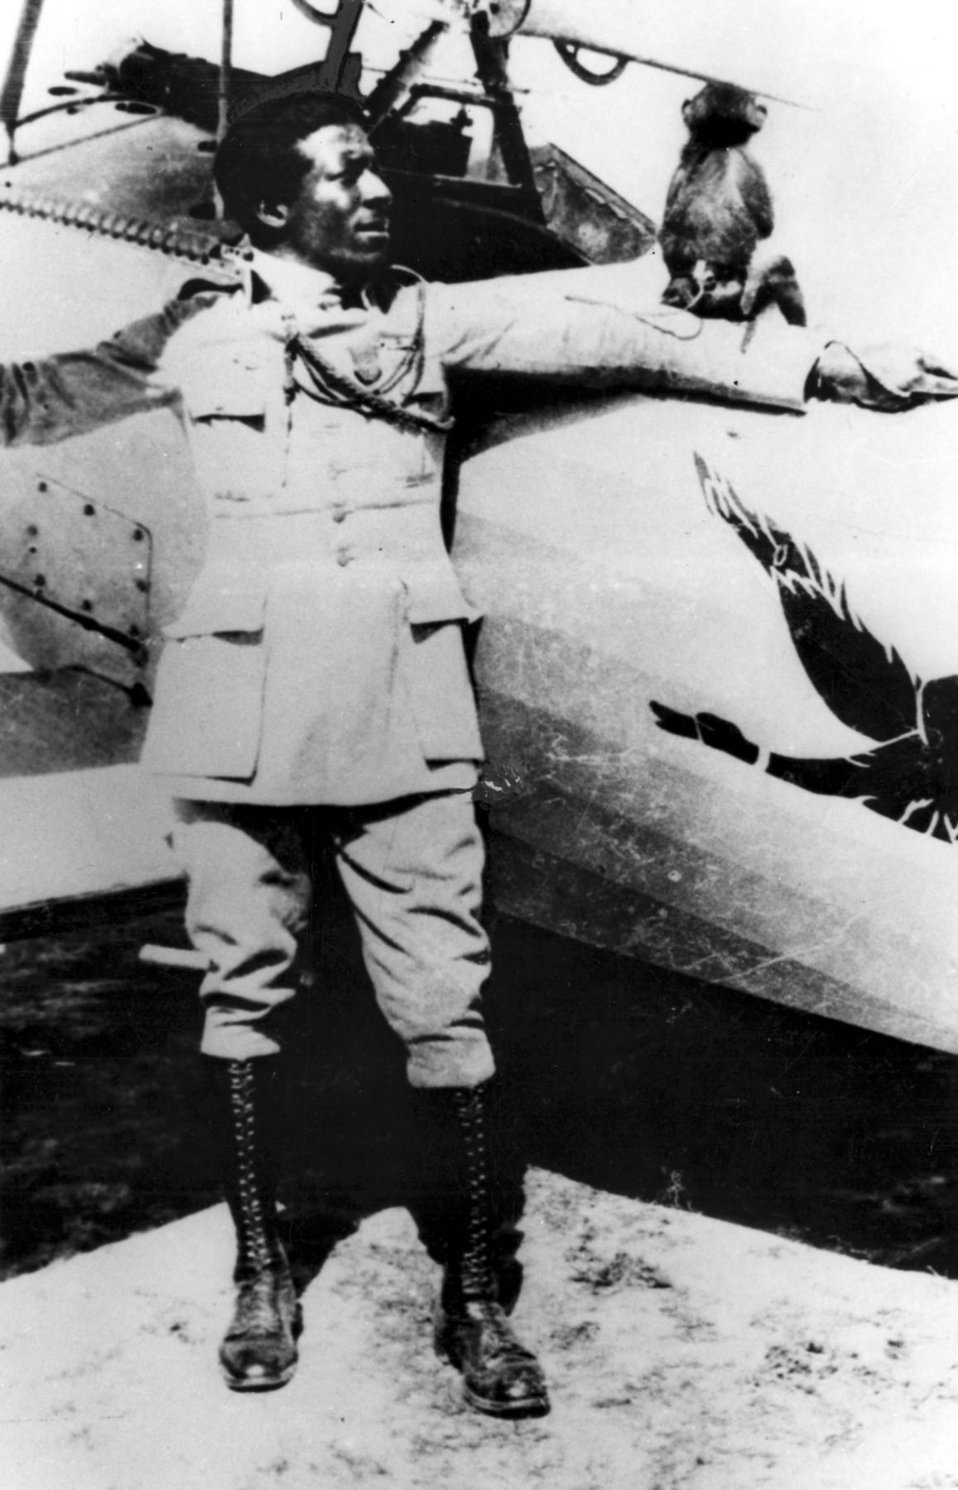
Eugene Bullard was awarded the French Legion of Honor for combat during World War I.

Eugene Bullard became the first African-American combat pilot, credited with two unofficial kills during World War I as part of the French Flying Corps.